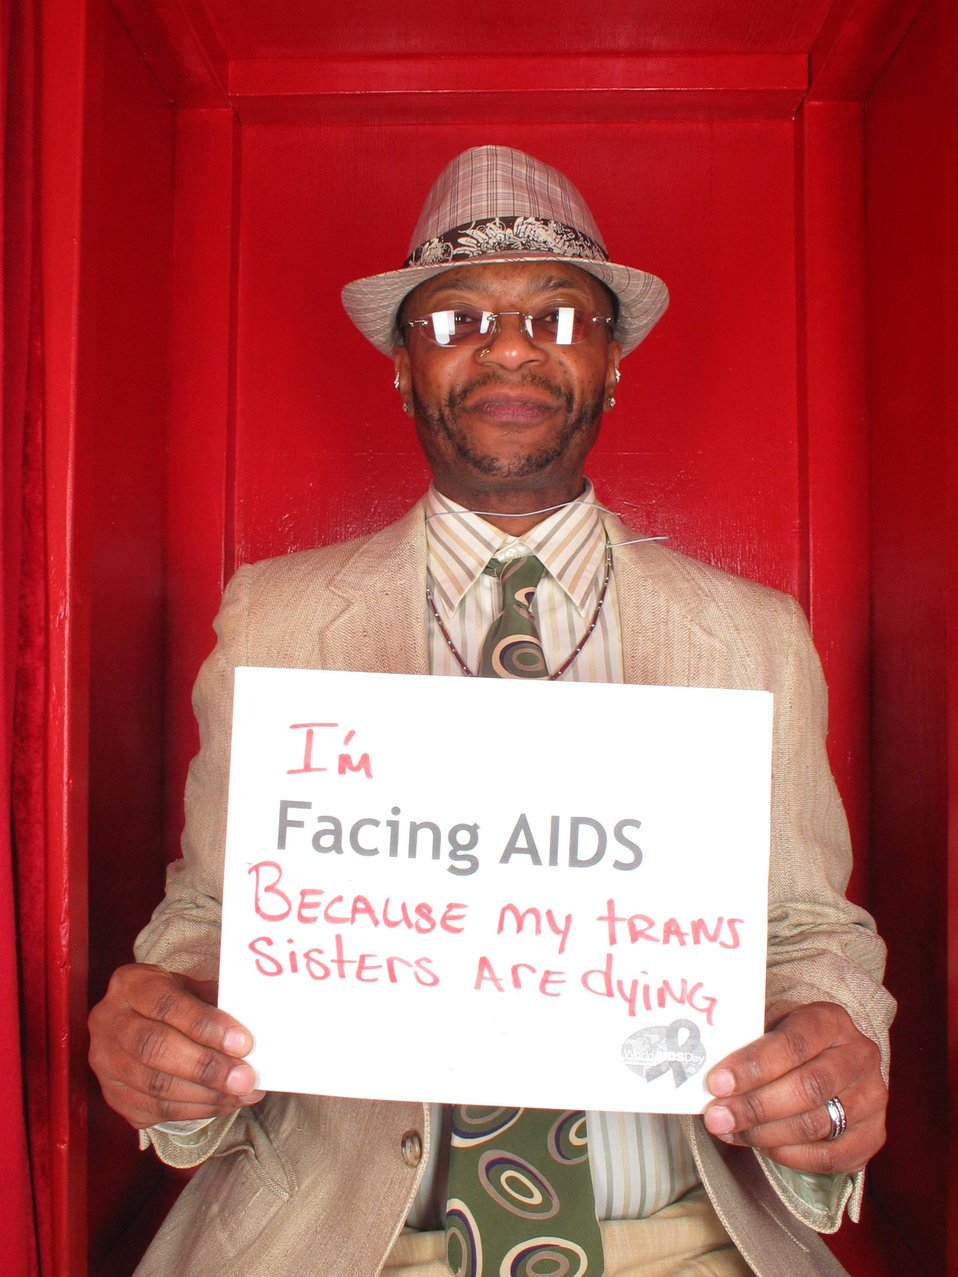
I'm Facing AIDS because my trans sisters are dying.